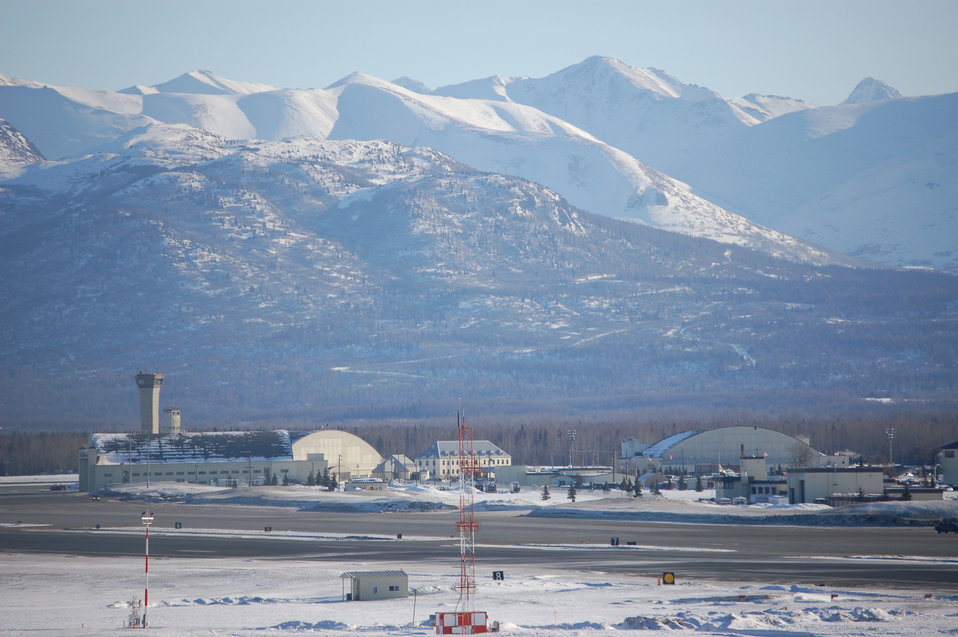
Elmendorf Airmen support PACAF operations

Elmendorf Air Force Base sits nestled against the Alaskan wilderness. The base is the largest Air Force base in Alaska and, due to its strategic location, can